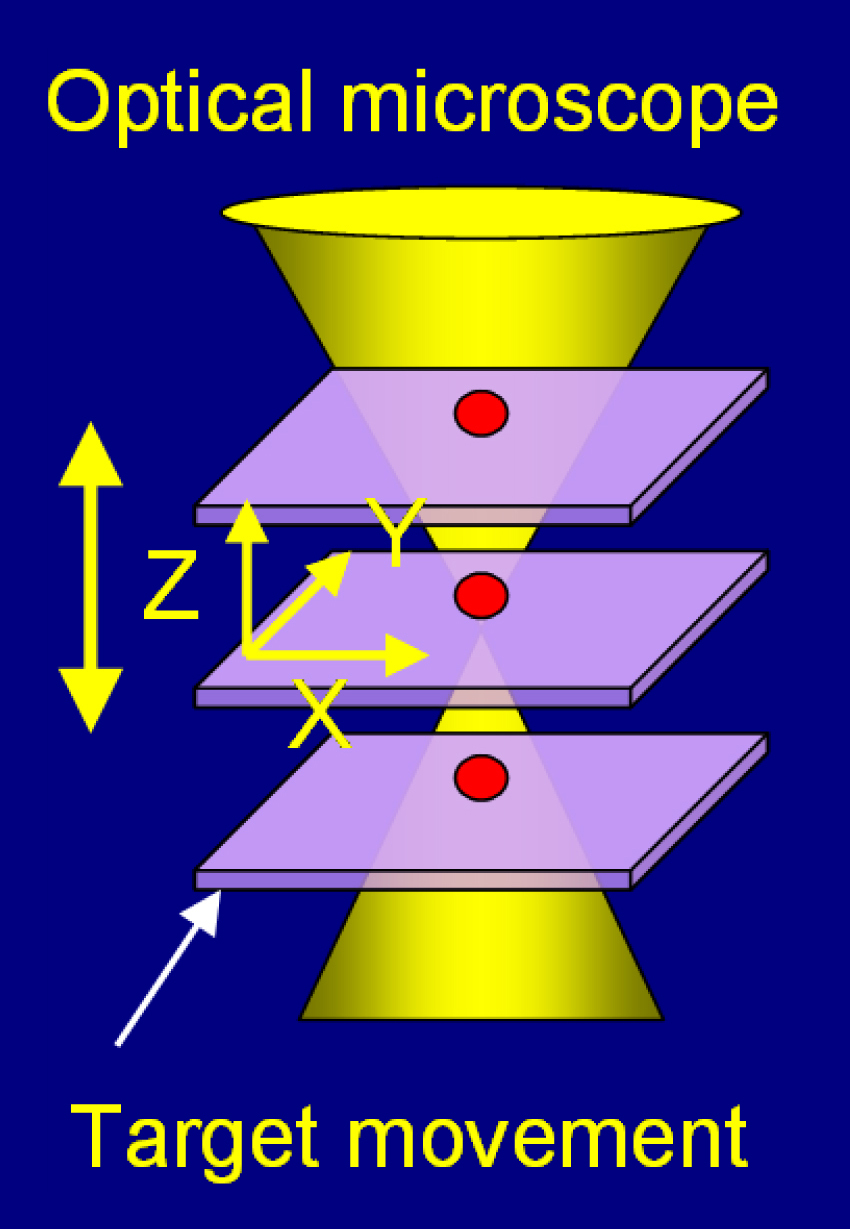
TSOM; Nanoscale Optical Technique

This schematic shows how a TSOM image is acquired. Using an optical microscope, several images of a 60 nanometer gold particle sample (shown in red) are taken at different focal positions and stacked together to make the TSOM image.